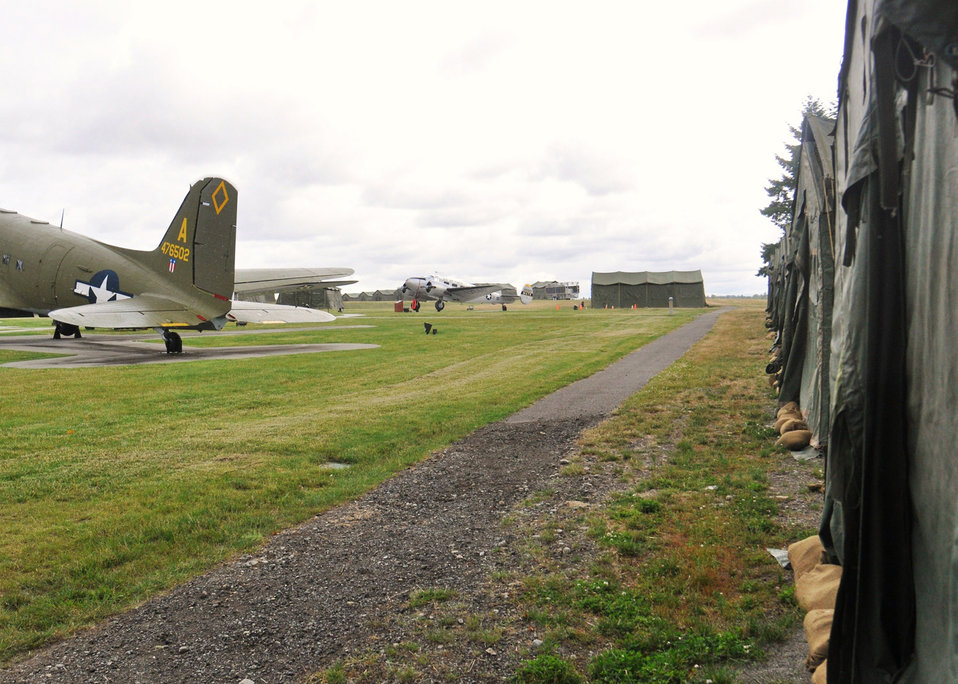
Air Mobility Command Rodeo

Tents are set up at Joint Base Lewis-McChord, Wash., in preparation for the upcoming Air Mobility Command Rodeo.